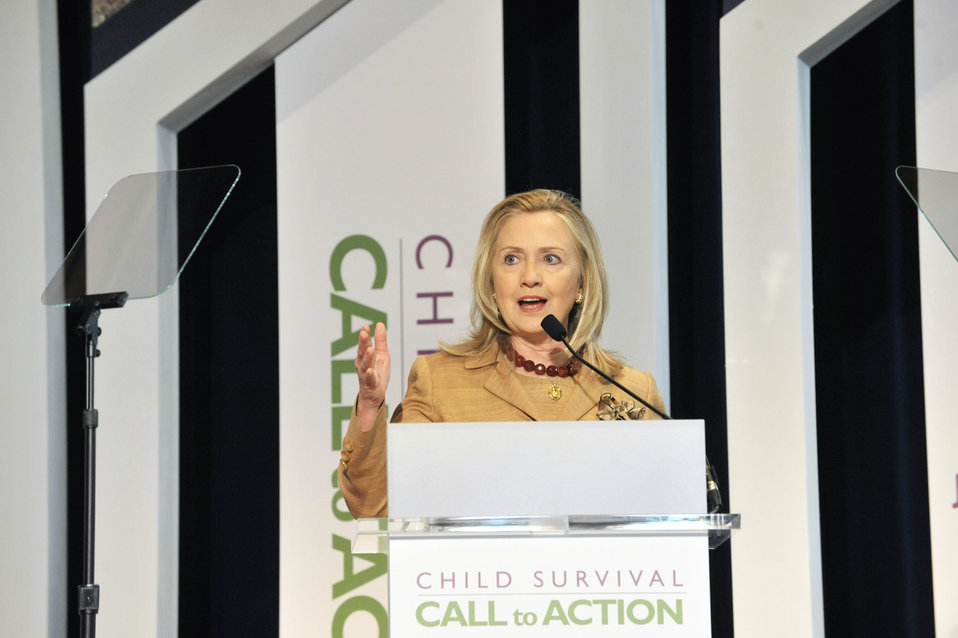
Secretary Clinton Delivers Remarks at the Child Survival Forum

U.S. Secretary of State Hillary Rodham Clinton delivers remarks at the Child Survival Forum at Georgetown University in Washington, D.C. on June 14, 2012.